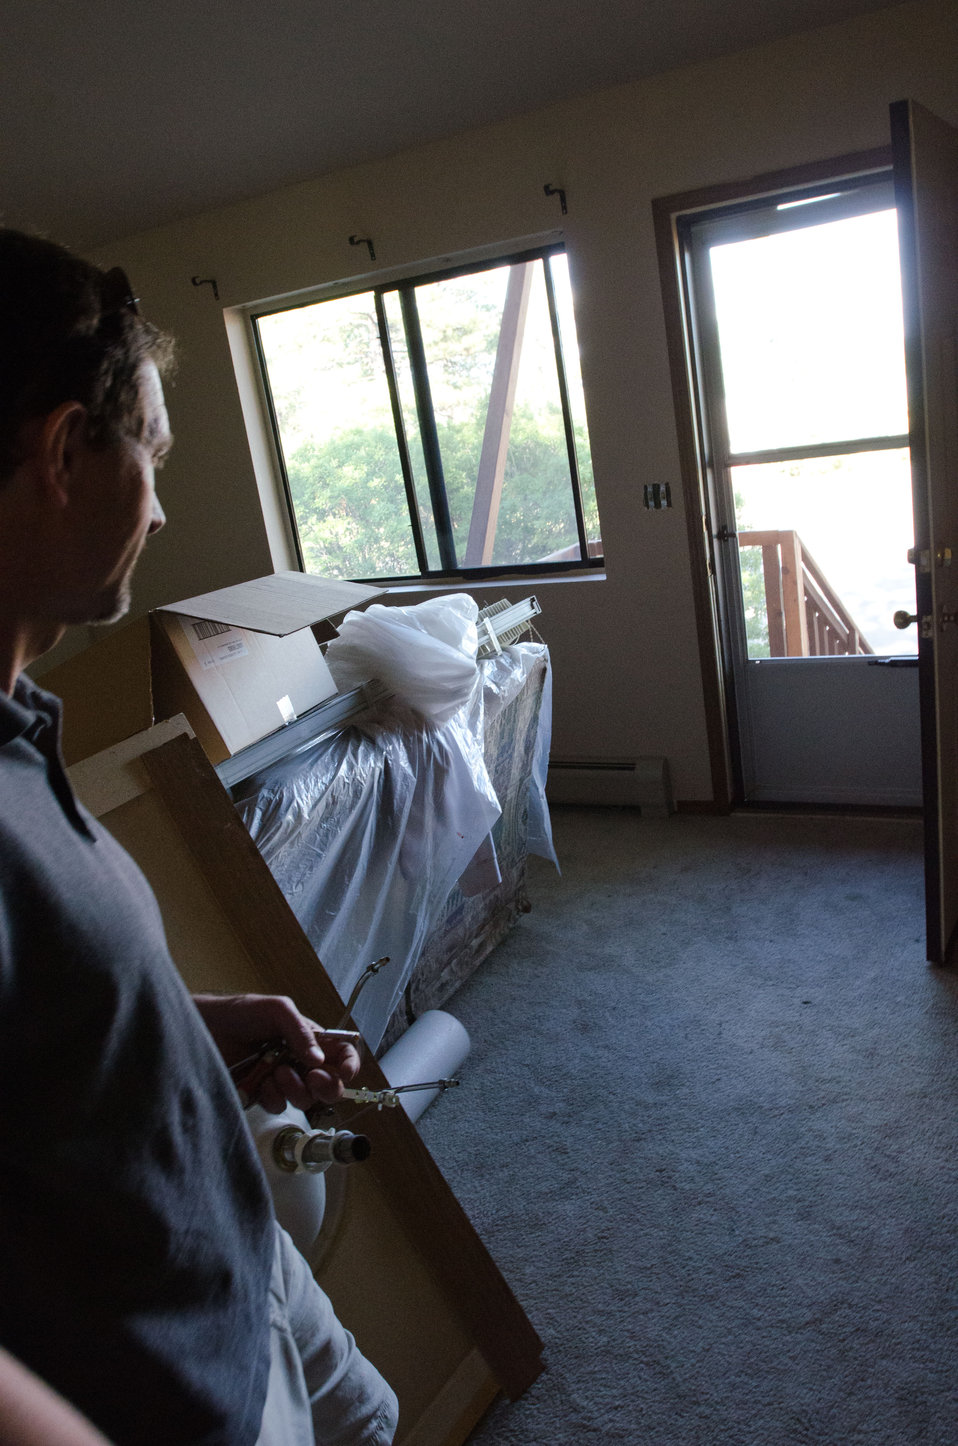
Colorado native and business owner Bruce Longwell protects his furniture during his first week of painting in his Durango, CO home on July 17, 2012. Mr. Longwell financed the single-family house with a U.S. Department of Agriculture (USDA) Rural Development (RD) Housing Assistance loan. This provided lower monthly payments than his prior rental home. Homeownership provides potential gains through home equity.